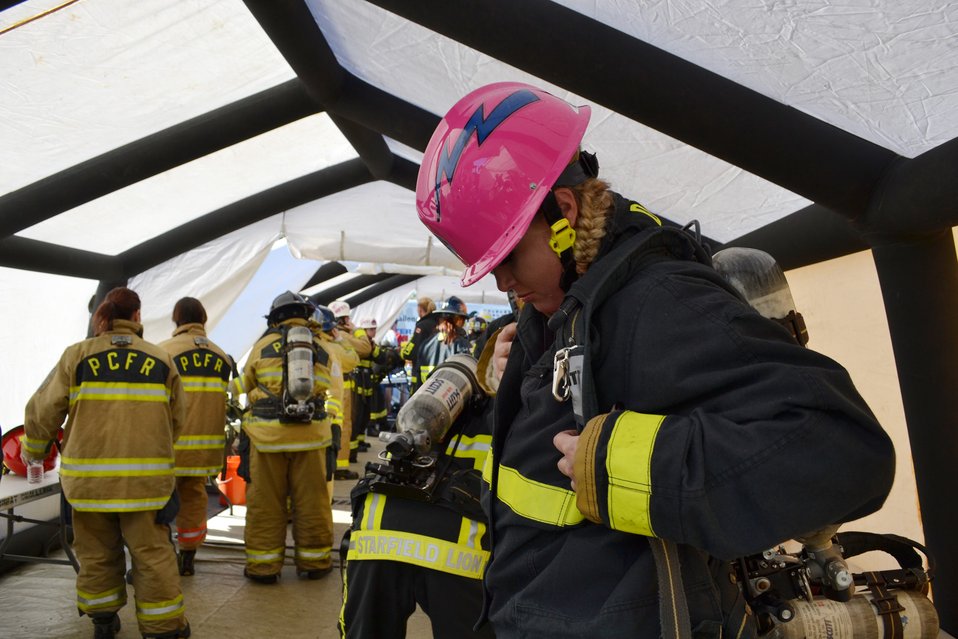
Academy firefighters win 3 world titles

Senior Airman Jessica Morehouse puts on her full bunker gear, including an air breathing apparatus, before she competes in the team relay event at the Scott Firefighter Combat Challenge in Myrtle Beach, S.C., on Nov. 13, 2010. Airman Morehouse is assigned to the Air Force Academy, Colorado Springs, Colo.